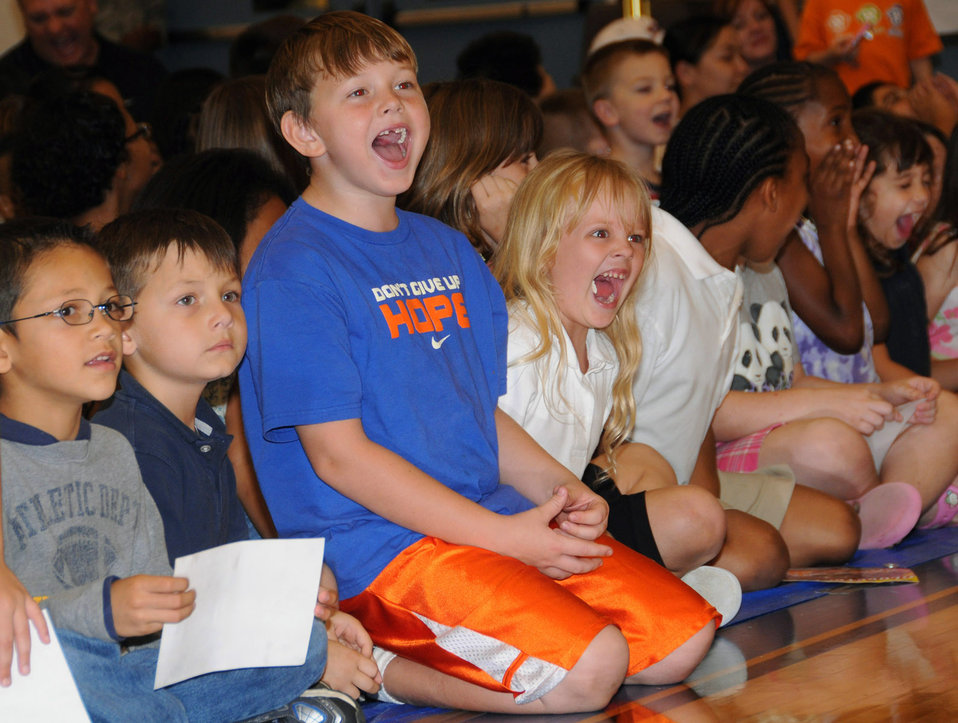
Harlem Globetrotters put on a show at Andersen

Children cheer on the Harlem Globetrotters during a game against the Washington Generals Dec. 15 at Andersen Air Force Base, Guam.